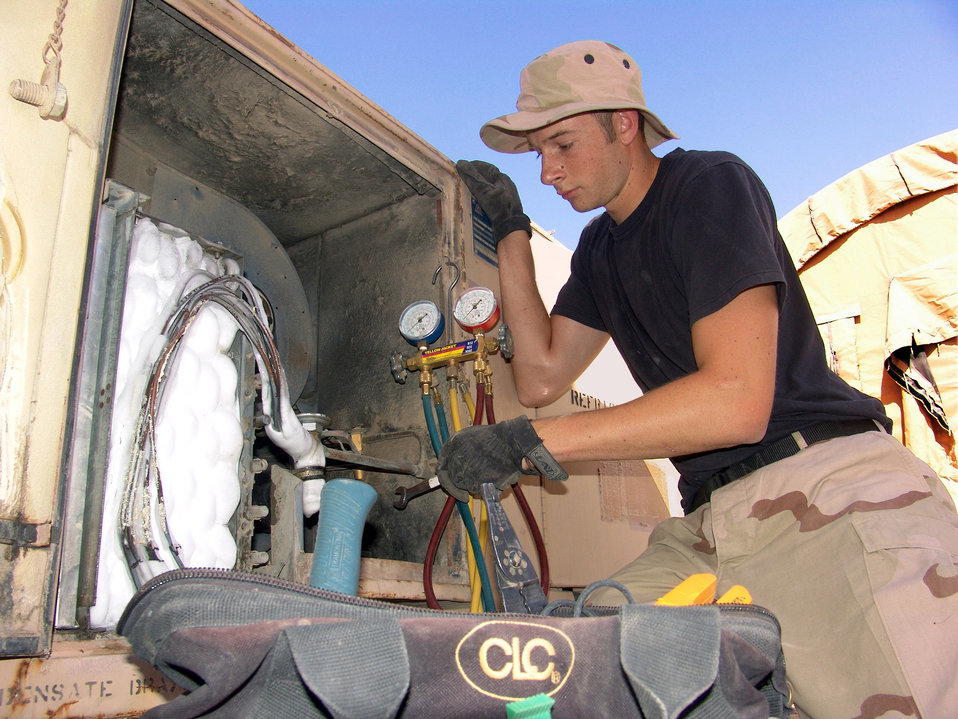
Operation IRAQI FREEDOM

SOUTHWEST ASIA -- Airman 1st Class Chris Turner tightens the belt on a blower assembly of a tent air conditioning unit here. Airman Turner is assigned to the 386th Expeditionary Civil Engineer Squadron. The squadron has a 12-person heating, ventilation and air conditioning shop responsible for the maintenance of more than 950 residential cooling units that keep tent city residents cool. Airman Turner is deployed from Misawa Air Base, Japan.